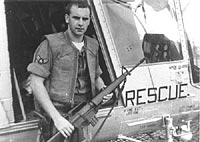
Medal of Honor

1960's -- Airman 1st Class William Pitsenbarger posthumously received the Medal of Honor and a promotion to staff sergeant for actions in the Vietnam War.